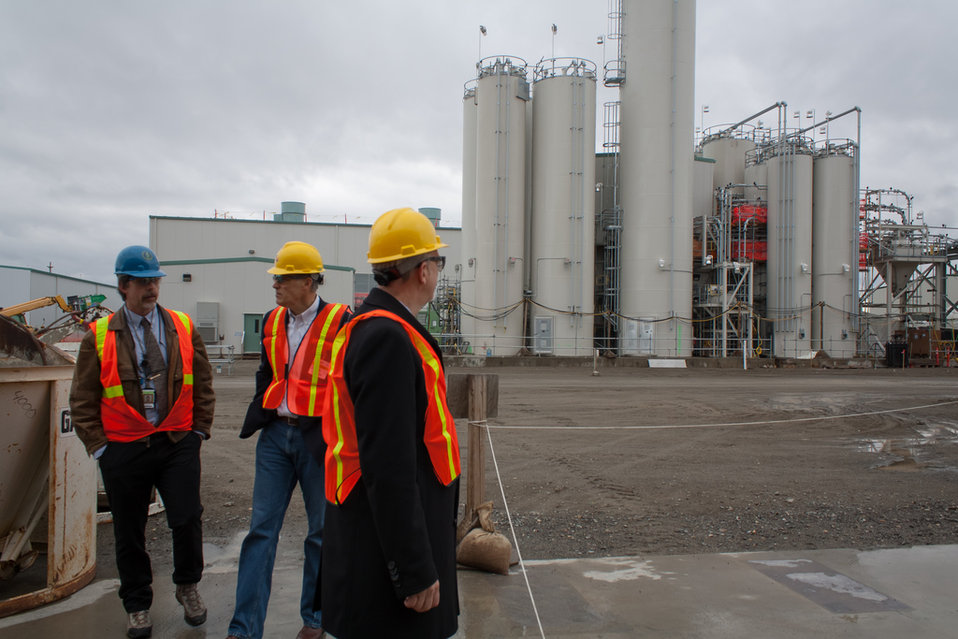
Inslee Visit at Hanford

Washington State Governor Jay Inslee, accompanied by Senior Advisor for Environmental Management Dave Huizenga, visits Hanford Tank Farms and Waste Treatment Plant